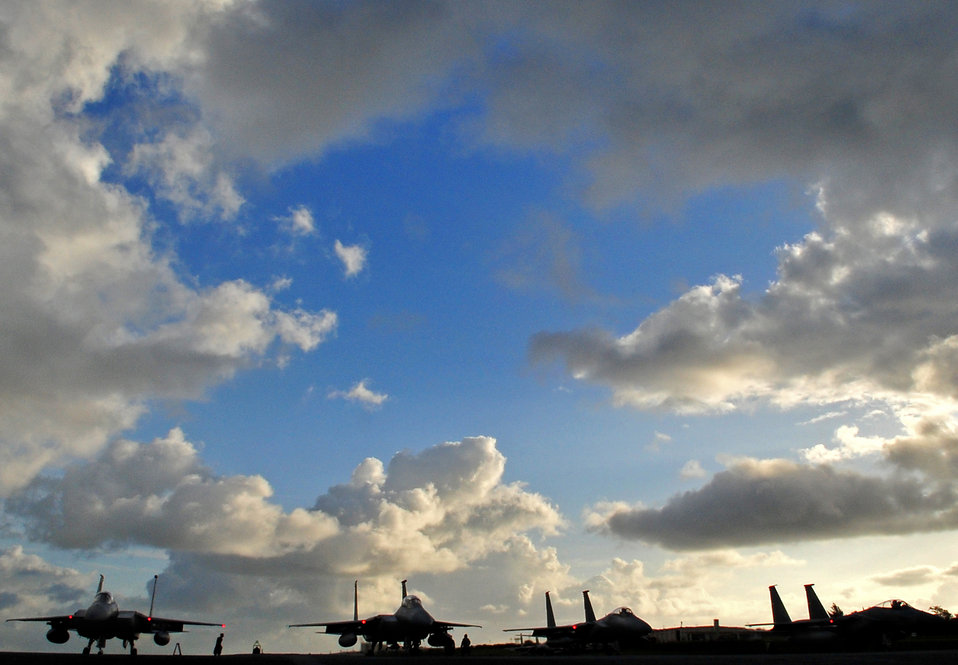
Joint Bilateral Training

Airmen from the 67th Aircraft Maintenance Unit ensure F-15C Eagles get one final check at the end of runway before take-off Feb. 23, 2010. Kadena Airmen were participating in joint bilateral training with other U.S. forces and the Japan Air Self Defense Force from Feb. 22 to 26.